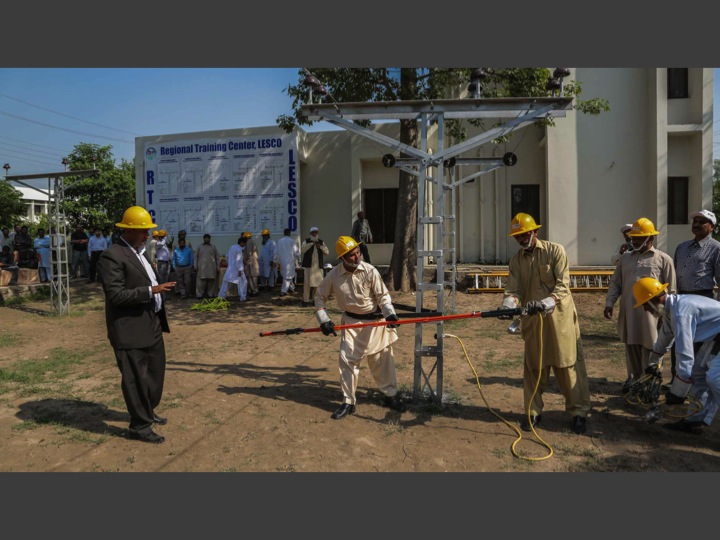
Linemen demonstrating the skills and techniques learnt from training